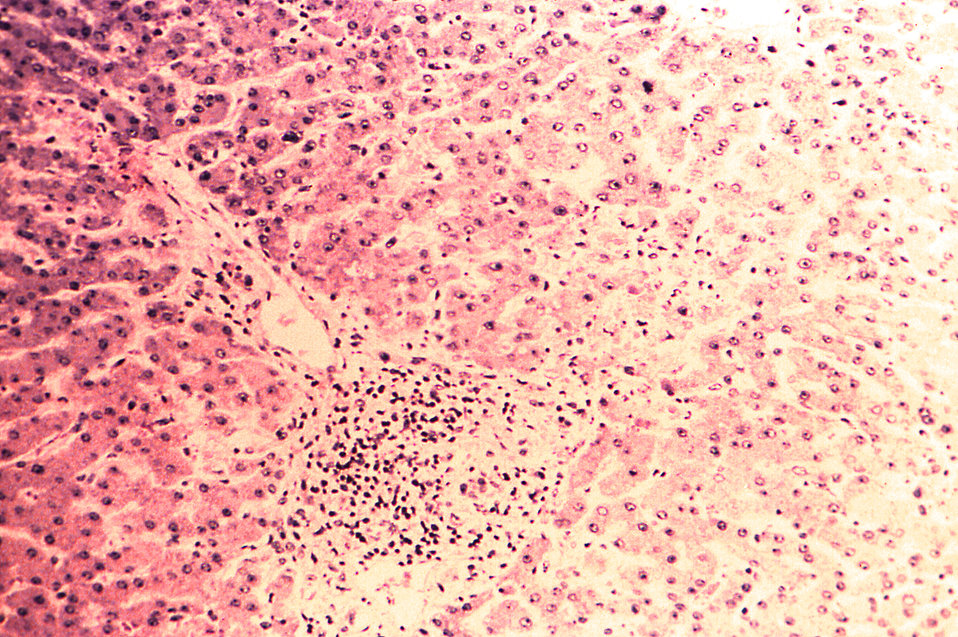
Under a magnification of 250X, this hematoxylin-eosin-stained (H&E) photomicrograph depicts the cytoarchitectural changes found in a liver tissue specimen extracted from a Lassa fever patient. In this particular view you'll note 'a small area of acidophilic necrosis, along with a few Councilman bodies in the vicinity of a periportal space, that had been infiltrated by lymphocytes'.